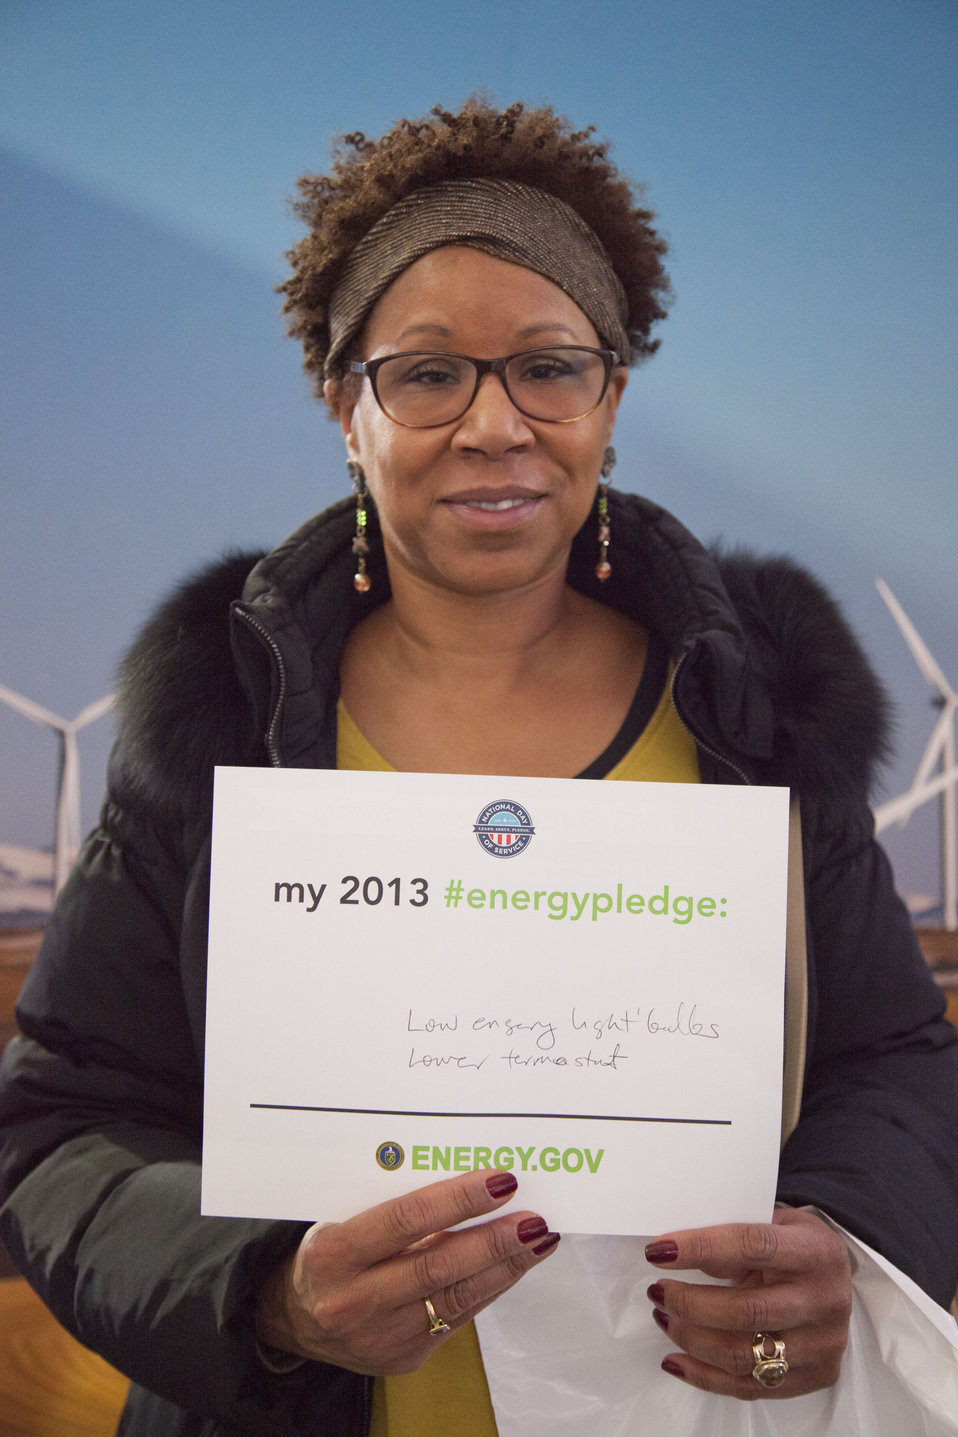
What's your #energypledge?